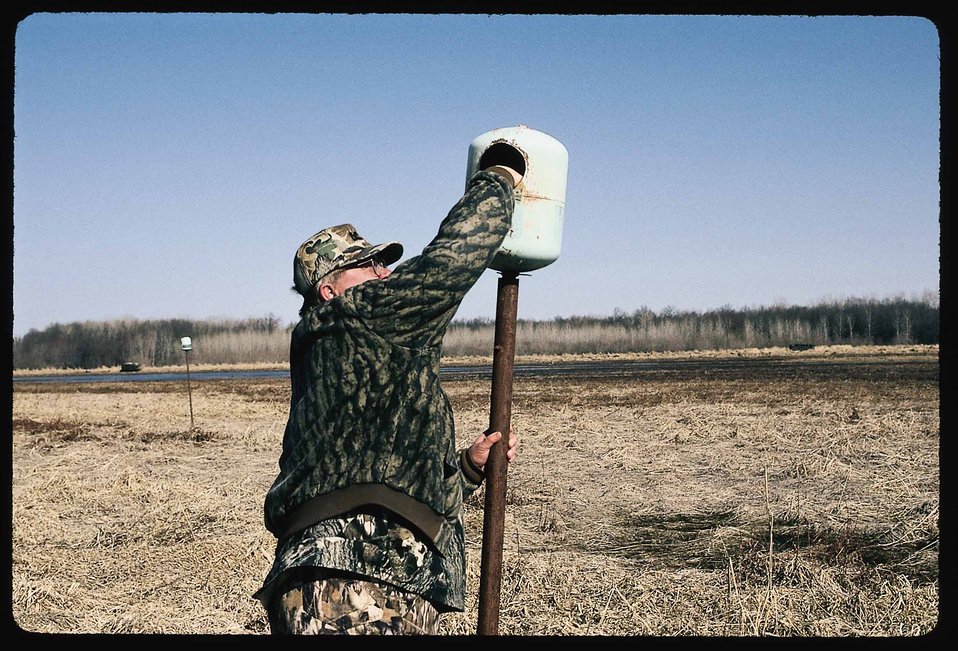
NRCS district conservationist Les Betts checks a wood duck nest on a restored wetland in Van Buren County.